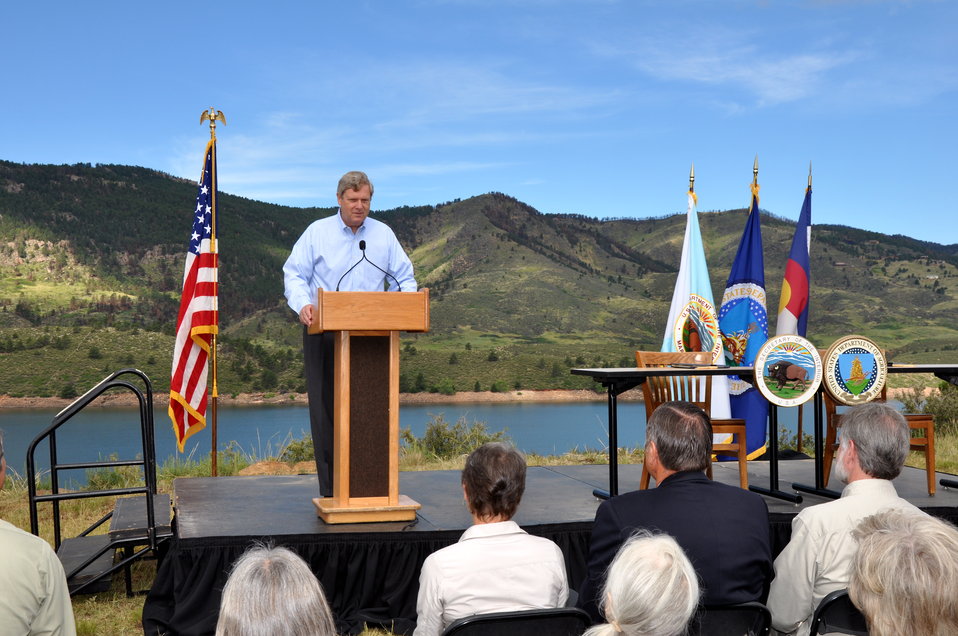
Agriculture Secretary Tom Vilsack speaks at the Memorandum of Understanding (MOU) signing held at the Horsetooth Reservoir in Fort Collins, CO on Jul. 19, 2013. This MOU will facilitate activities such as wildfire risk reduction through forest thinning, prescribed fire and other forest health treatments; minimizing post-wildfire erosion and sedimentation; and restoring areas that are currently recovering from past wildfires through tree planting and other habitat improvements.